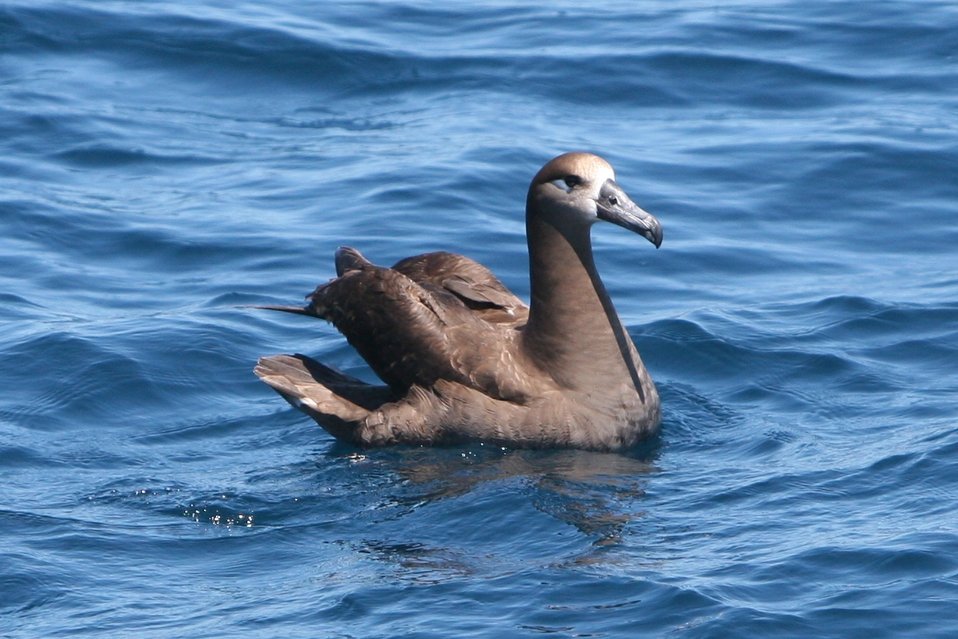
Black-footed Albatross (Phoebastria nigripes) sitting on the water